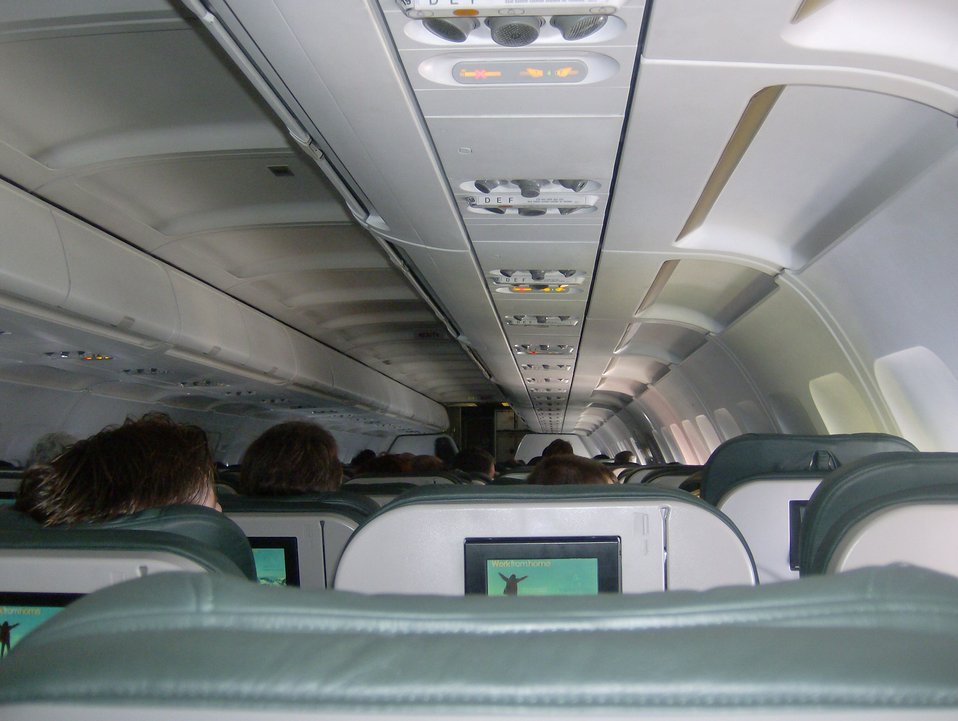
Cabin interior of Frontier Airlines